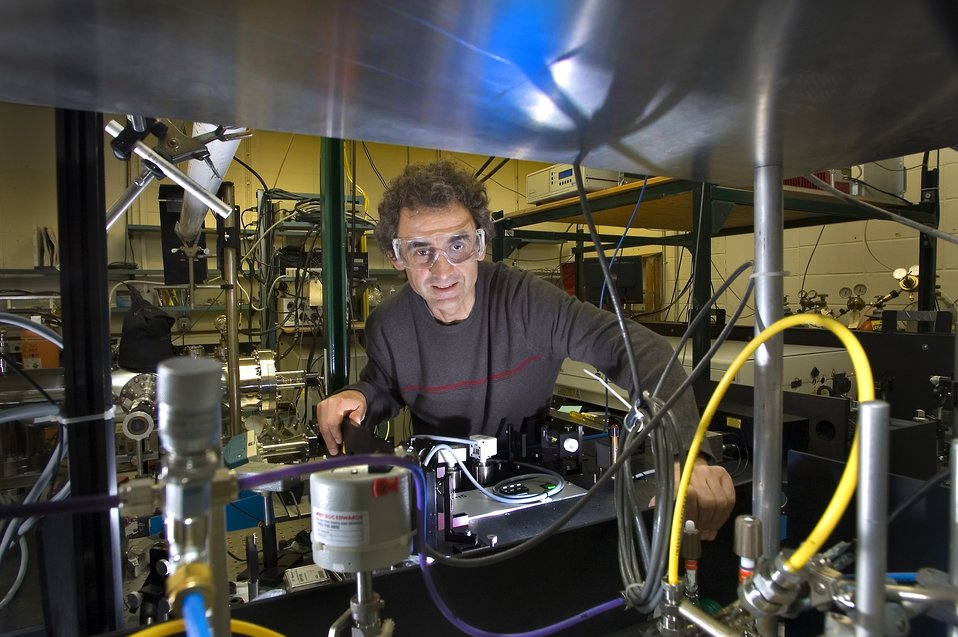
BNL scientist Trevor Sears was recognized for advancing the molecular spectroscopy of transient species through the invention of new techniques. Their obtaining valuable information about these transients.
Trevor Sears uses laser spectroscopy to study molecules in chemical reactions involved in burning hydrocarbon fuels. Measuring how the molecules absorb and emit light help to explain their structures, while determining the amount of light a sample absorbs at a particular wavelength reveals the quantity of an absorbing molecules in the sample. The long-term benefits of this research are a deeper understanding of the chemistry of combustion and cleaner and more efficient use of hydrocarbon fuels.